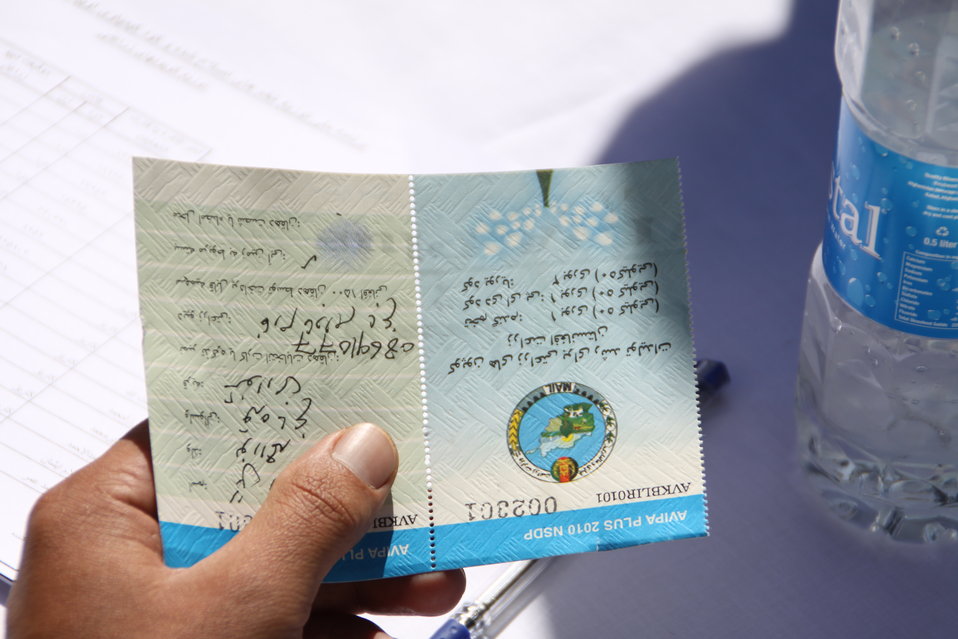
AVIPA Plus Wheat Seed Distribution 101005

US Ambassador Karl Eikenberry and USAID Acting Mission Director Kevin Brownawell joined the Minister of Agriculture, Irrigation and Livestock, H.E. Minister Mohammed Rahimi in signing a Memorandum of Understanding and distributing vouchers to area farmers for wheat and fertilizer.

US Ambassador Karl Eikenberry and USAID Acting Mission Director Kevin Brownawell joined the Minister of Agriculture, Irrigation and Livestock, H.E. Minister Mohammed Rahimi in signing a Memorandum of Understanding and distributing vouchers to area farmers for wheat and fertilizer.